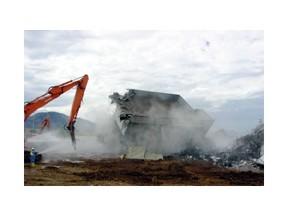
Building 371, Rocky Flats

The last of Building 371 comes down at the Rocky Flats Environmental Technology Site near Golden, CO.